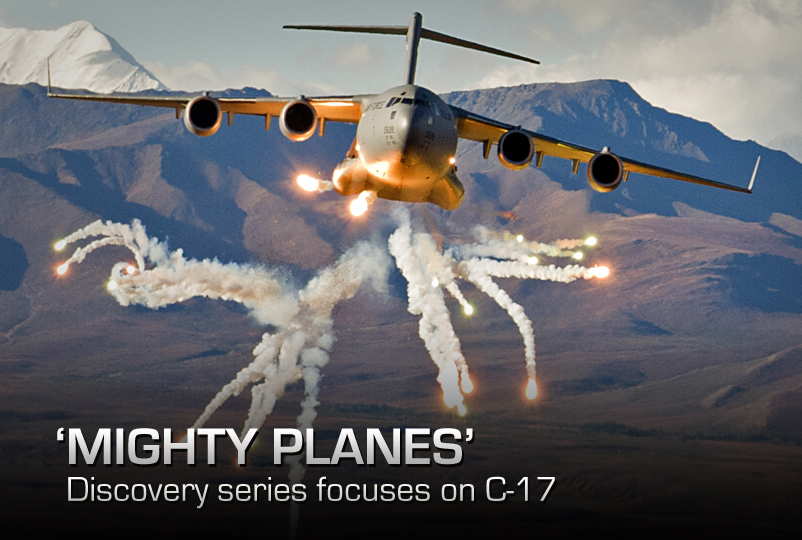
'Mighty Planes'

A C-17 Globemaster III cargo plane sets off flares during the 3rd Wing